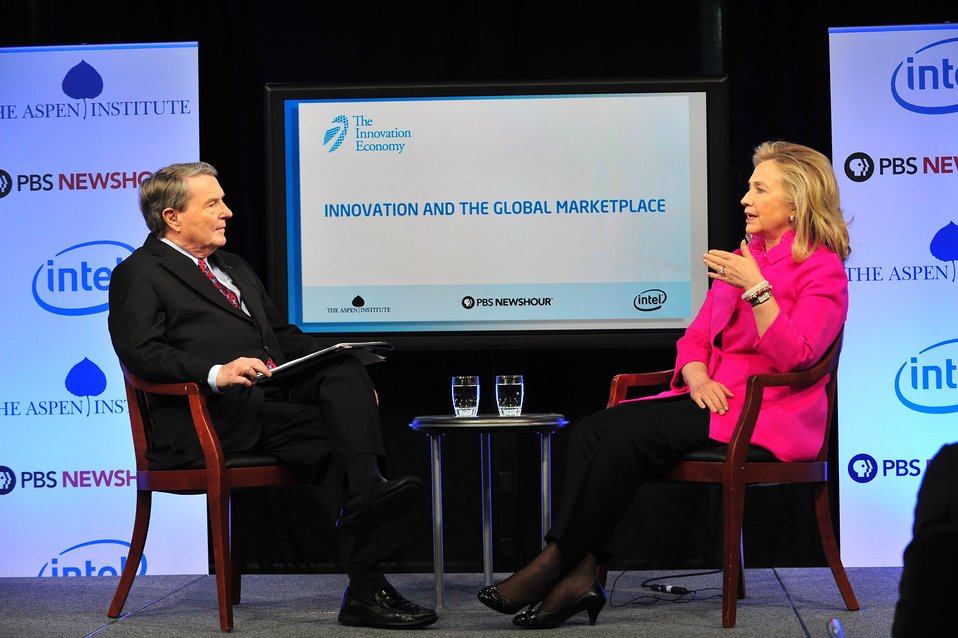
Secretary Clinton Joins Jim Lehrer in a Discussion

U.S. Secretary of State Hillary Rodham Clinton joins Jim Lehrer in a discussion at the Innovation and the Global Marketplace: A Discussion on American Innovation, Trade and the Next 10 Million Jobs event at the Newseum, in Washington, D.C., on December 14, 2011.